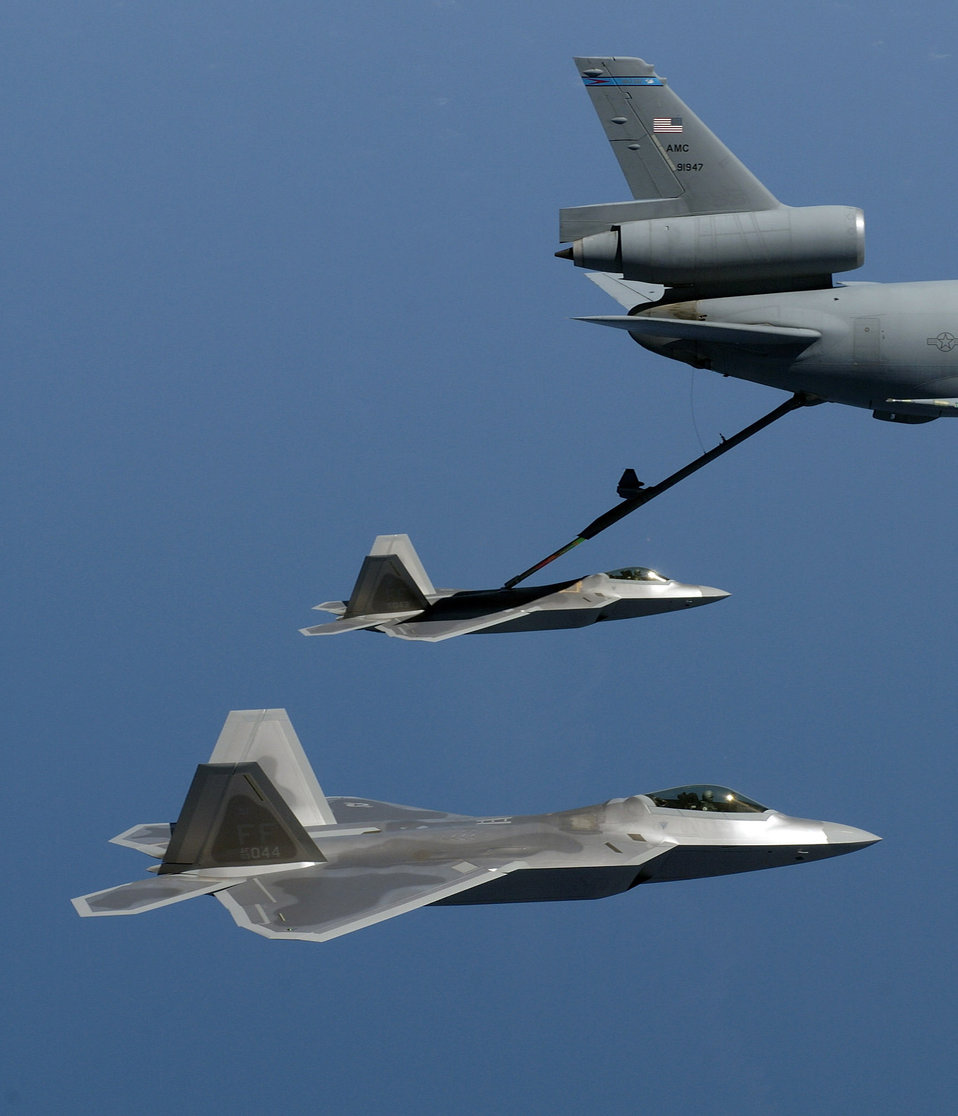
Raptor presence

LANGLEY AIR FORCE BASE, Va. -- An F/A-22 Raptor receives gas from a McGuire Air Force Base, N.J., KC-10 Extender during a training sortie here. The 27th Fighter Squadron currently has five permanently assigned Raptors.